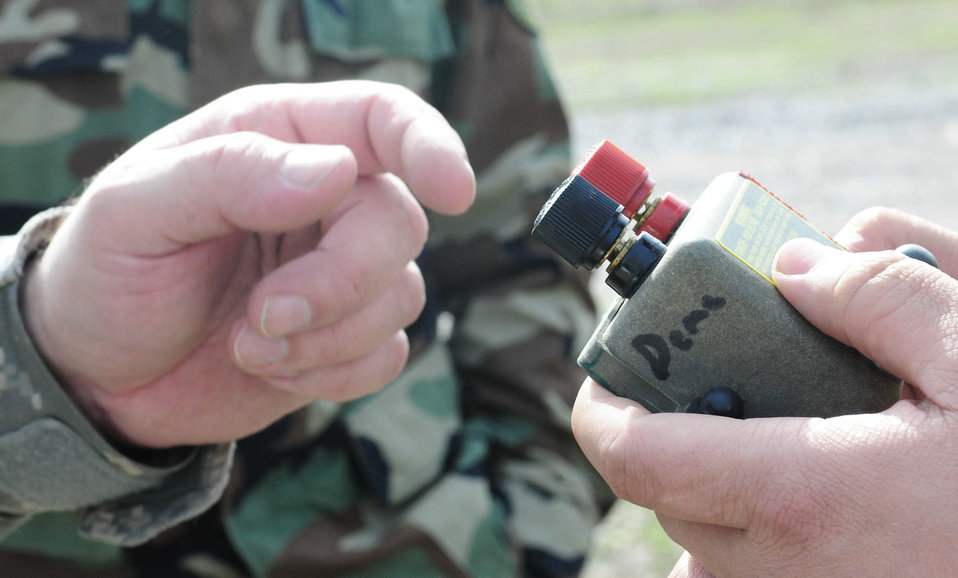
Joint EOD training benefits 2 nations

Kyrgyz army explosive ordnance disposal technicians visit the Transit Center at Manas, Kyrgyzstan, for a subject matter information exchange with EOD Airmen March 16, 2010.